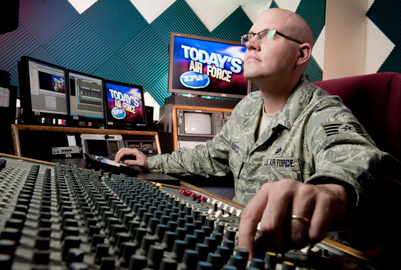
Today's Air Force